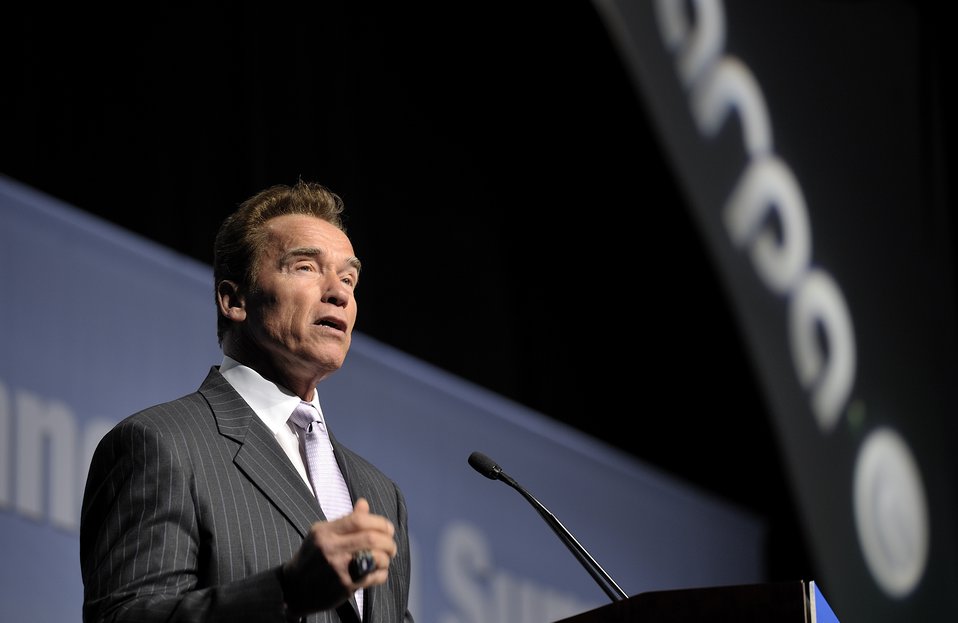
ARPA-E Energy Innovation Summit 2011, 17 of 83

Arnold Schwarzenegger, Former Governor of California.